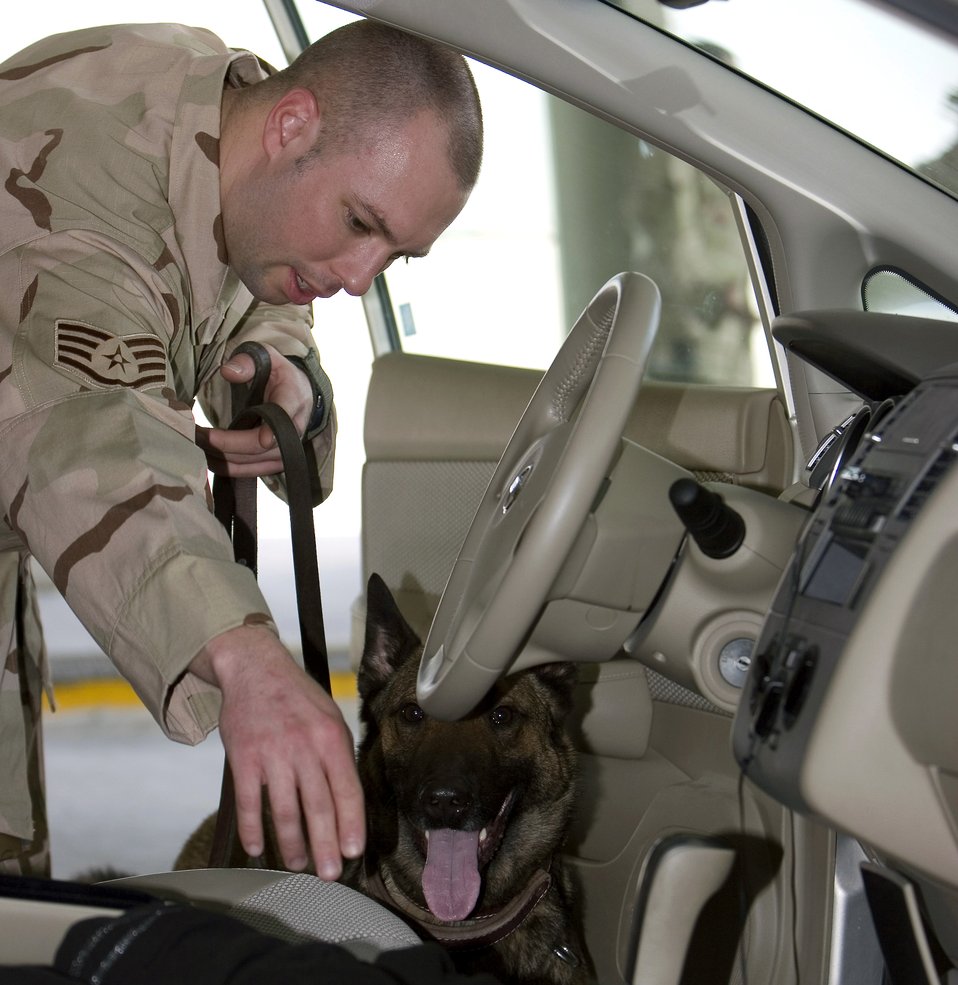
Working dog teams search, patrol together

Staff Sgt. Spencer Duclos conducts a vehicle search with his dog, Boo, at the vehicle search pit Feb. 13 in Southwest Asia. Sergeant Duclos is a military working dog handler assigned to the 379th Expeditionary Security Forces Squadron.